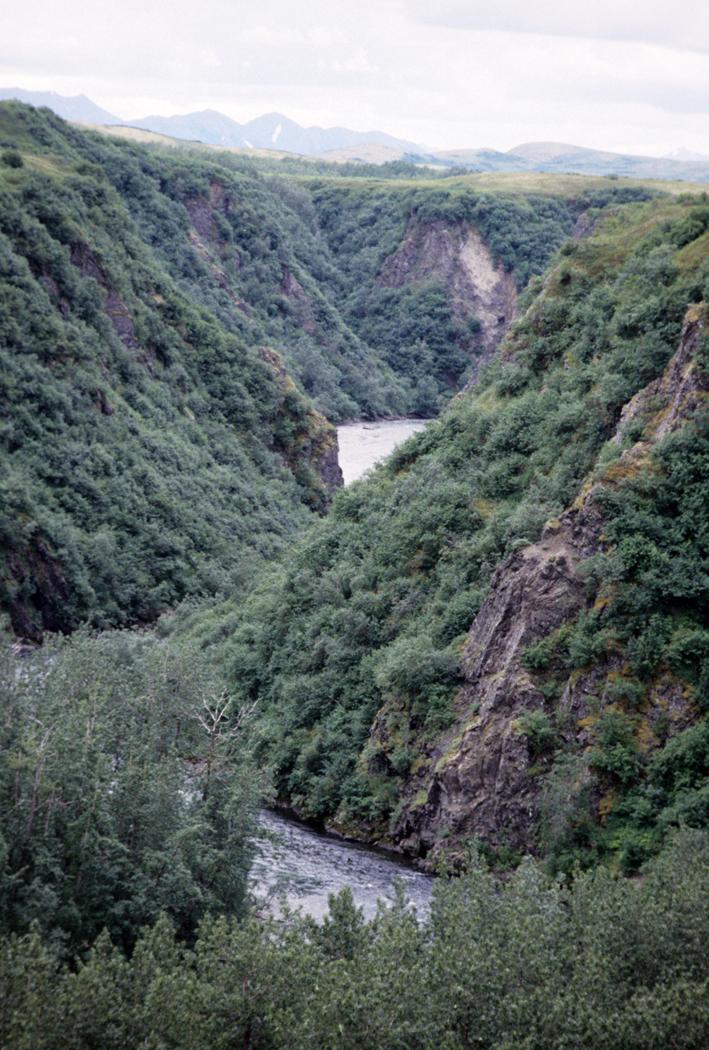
Kemuk River

View of the Kemuk River